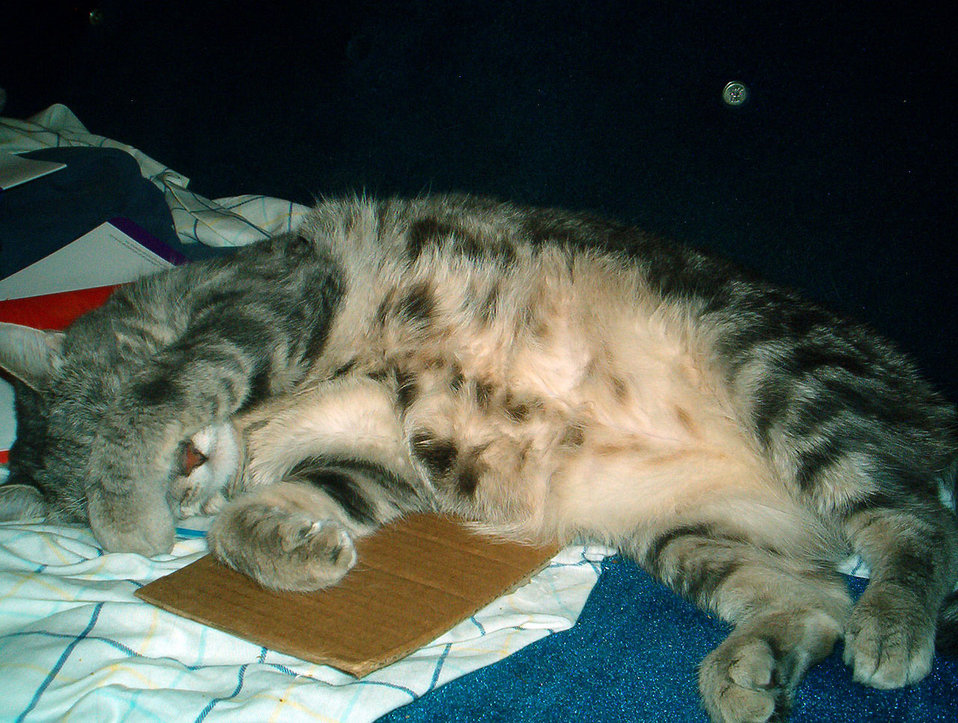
Taxilady

Gray cat sleeping with paw over eyes.